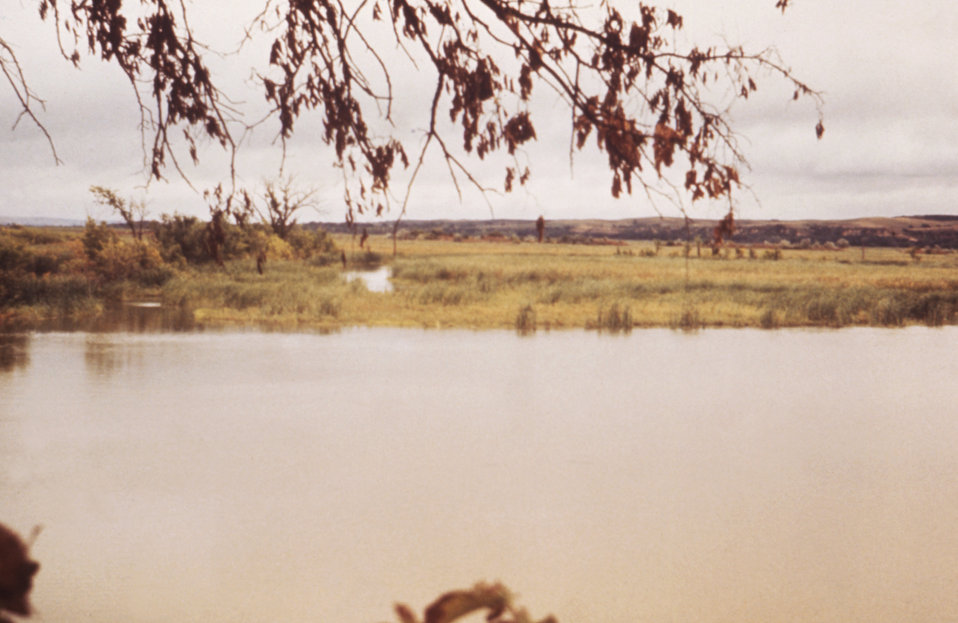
This 1976 photograph shows the marshes surrounding Lewis and Clark Lake in Nebraska.